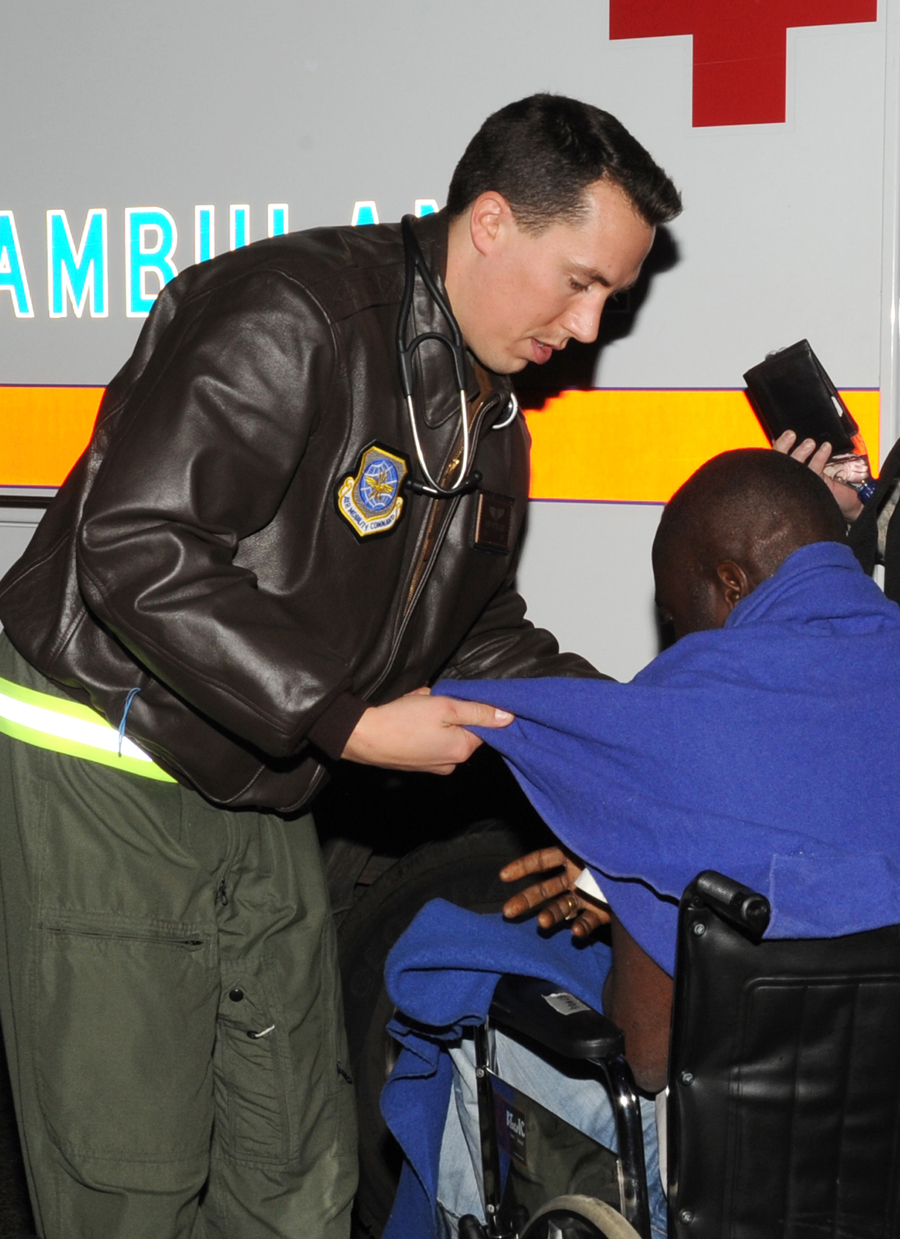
Haiti evacuees at JB MDL

JOINT BASE MCGUIRE-DIX-LAKEHURST, N.J. – Captain Brent Mittelstadt, 87th Aeromedical Squadron flight surgeon, provides basic medical care to a Haitian evacuee shortly after a C-17 arrived with 44 survivors of Tuesday’s earthquake. The 87th Medical Group set up a clinic at the McGuire Fitness Center to provide care for the evacuees.